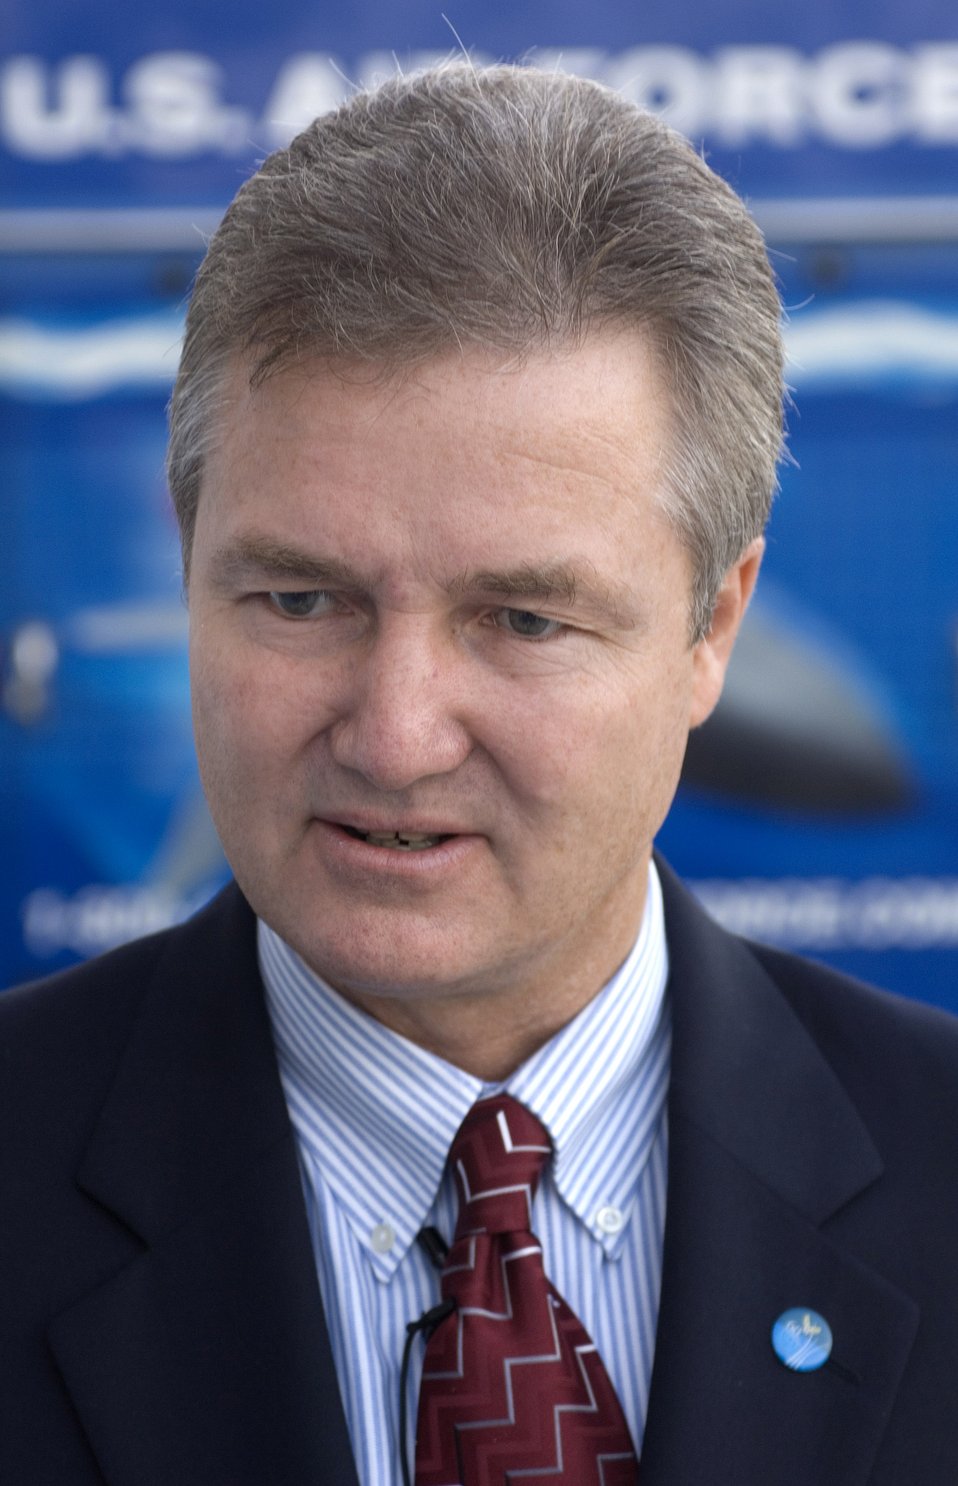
Air Force Week Atlanta kicks off

Retired Chief Master Sergeant of the Air Force Gerald R. Murray speaks about today's Air Force and the importance of Air Force Week Atlanta during a proclamation ceremony Oct. 8 in Marietta, Ga., that began the week's events. The Air Force Week program is meant to increase the awareness and support of the public by informing them and involving them in activities that showcase the Air Force's diverse capabilities and missions, its accomplishments and the sacrifice of its Airmen. Atlanta is one of six cities throughout the country chosen to host an Air Force Week Oct. 8 to 14. The theme for the year is